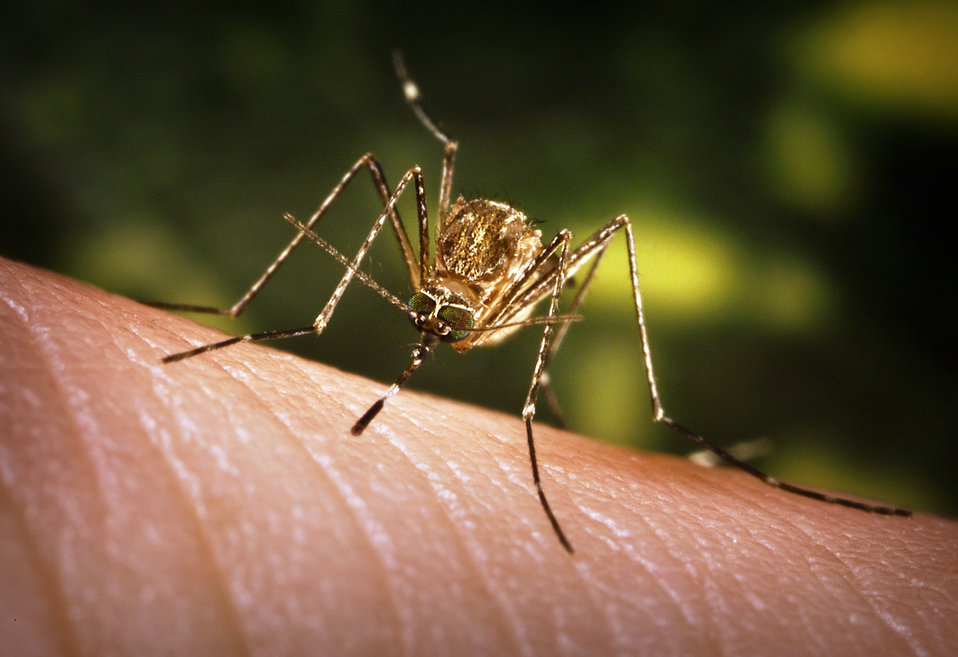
This 2005 photograph depicted a close-up anterior view of a Culex tarsalis mosquito as it was about to begin feeding, after having landed on the skin of what will become its human host. Note the light-colored band wrapped around its dark-scaled proboscis, and though not noticeably apparent, if you look closely, the multiple similarly light-colored bands wrapped around its distal appendages, i.e., the tibia and femur, of its forelegs and middle pair of legs, identifying this as C. tarsalis.